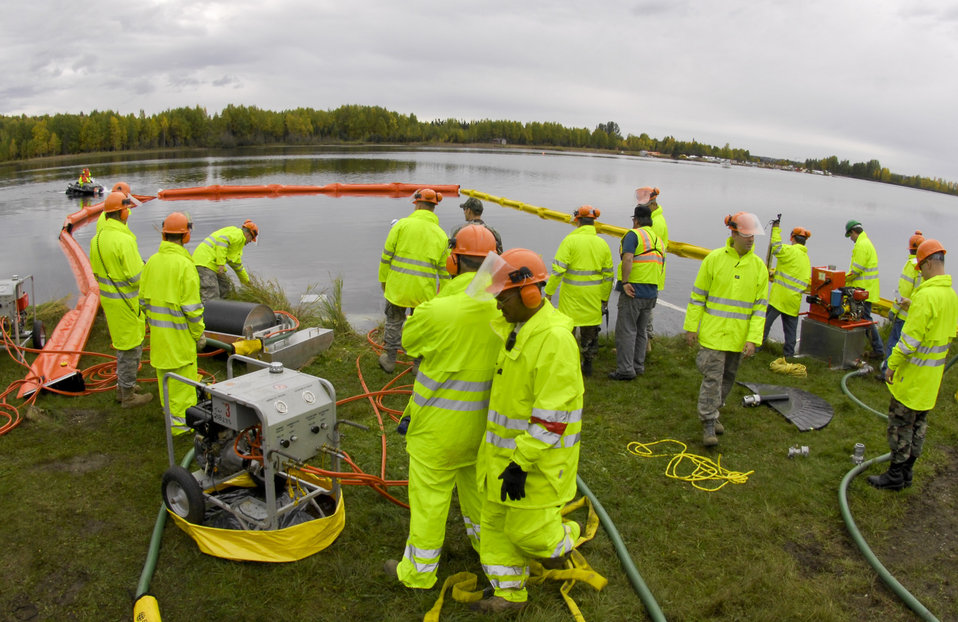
Fall spill drill

ELMENDORF AIR FORCE BASE, Alaska ? Nearly 60 member from the 611th Civil Engineer Squadron practiced cleaning up a hazardous spill here Sept. 17. The 611th held its annual Fall Spill Drill Sept. 14-18. The 611th CES is required to do hands-on training twice a year, one which is held in the winter and practiced on thick ice and the second held in the fall before the ice freezes over.